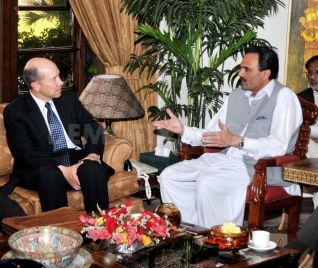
Assistant Secretary Johnson Meets With Chief Minister Ameer Haidar Khan Hoti

U.S. Assistant Secretary for the Bureau of International Narcotics and Law Enforcement Affairs (INL) David Johnson meets with Khyber Pakhtoonkhwa Chief Minister Ameer Haidar Khan Hoti on his April 2010 trip to Pakistan.